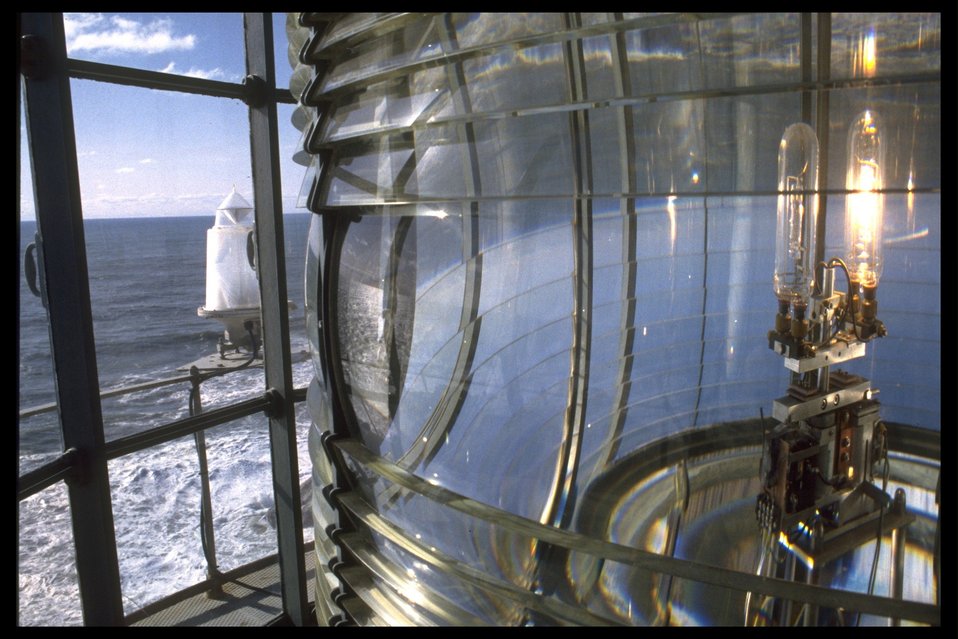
The lightbulb (1000 watt lens) on the interior of the Yaquina Head lighthouse.